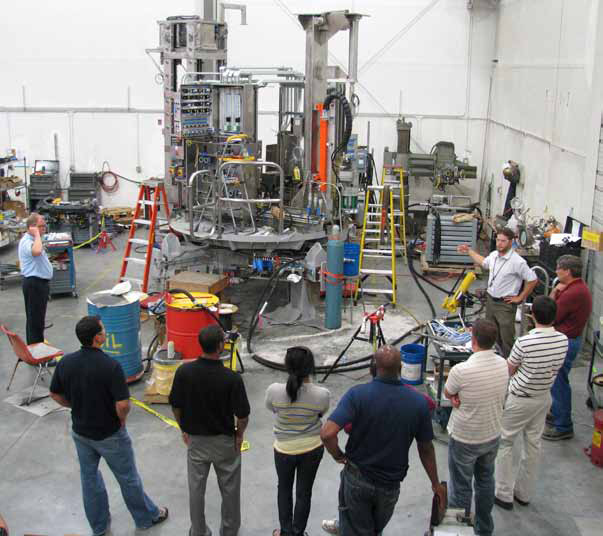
New Core Sampling Platform

Recovery Act-funded work on a new core sampling platform is nearing completion. Nicknamed “the crab” for its crustacean-like legs, the platform houses a drill, x-ray machine, and a rack to hold samples. The 23,000-lb. steel platform requires a crane to lift it into place, yet is so nimble that you can rotate the platform with the force from your hand. The platform will replace aging equipment and also help more accurately sample and characterize tank waste.